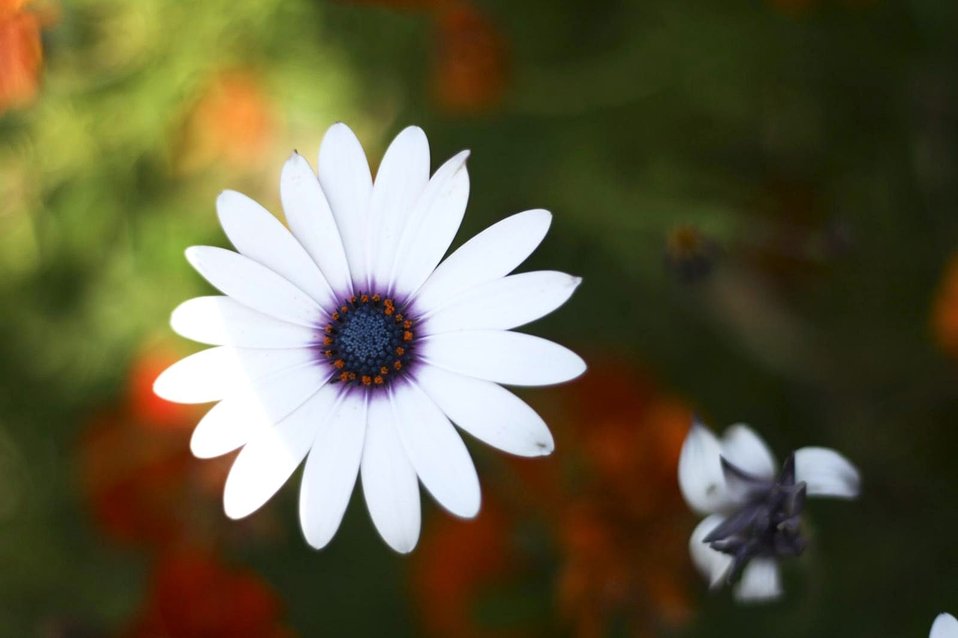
English:
Image title: Beautiful white flower in garden Image from Public domain images website, http://www.public-domain-image.com/full-image/flora-plants-public-domain-images-pictures/flowers-public-domain-images-pictures/beautiful-white-flower-in-garden.jpg.html